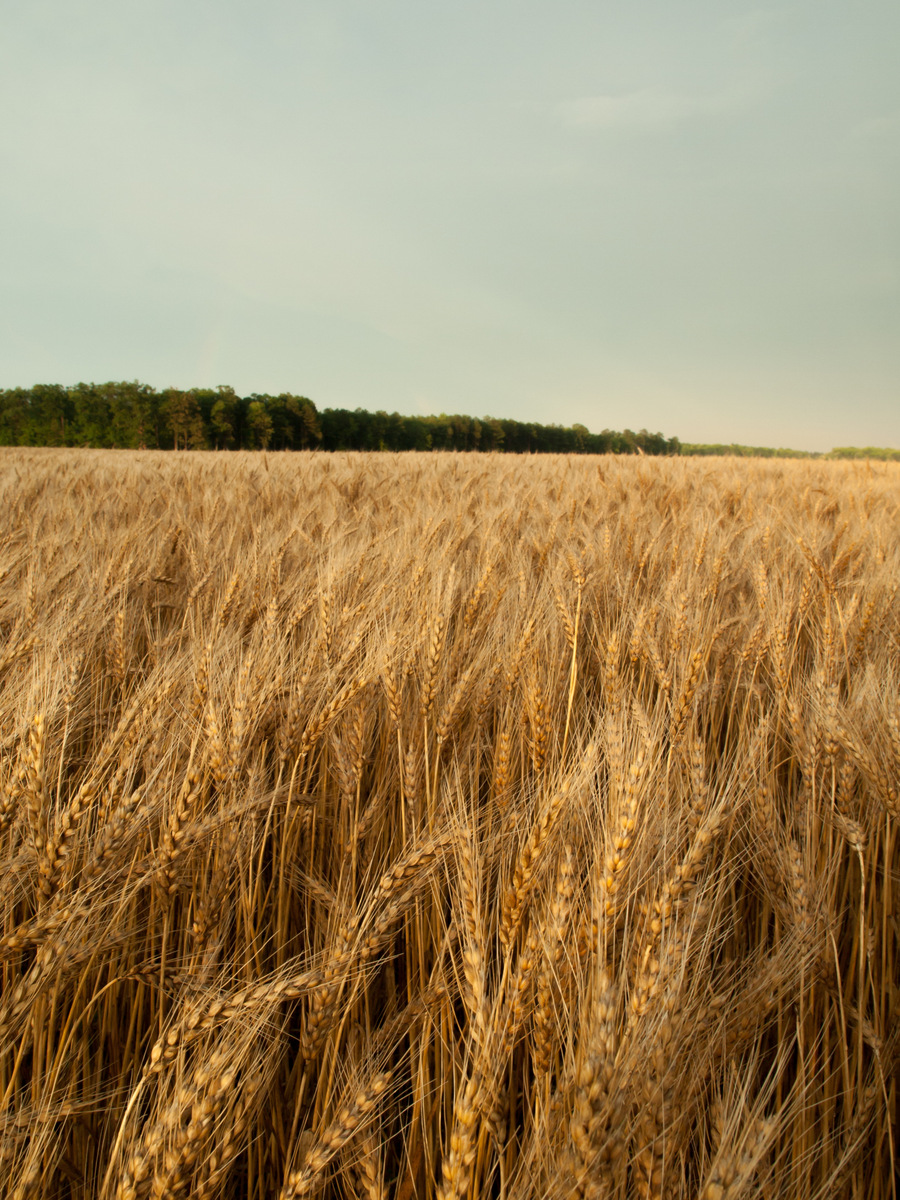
Farm field at Blackwater National Wildlife Refuge.